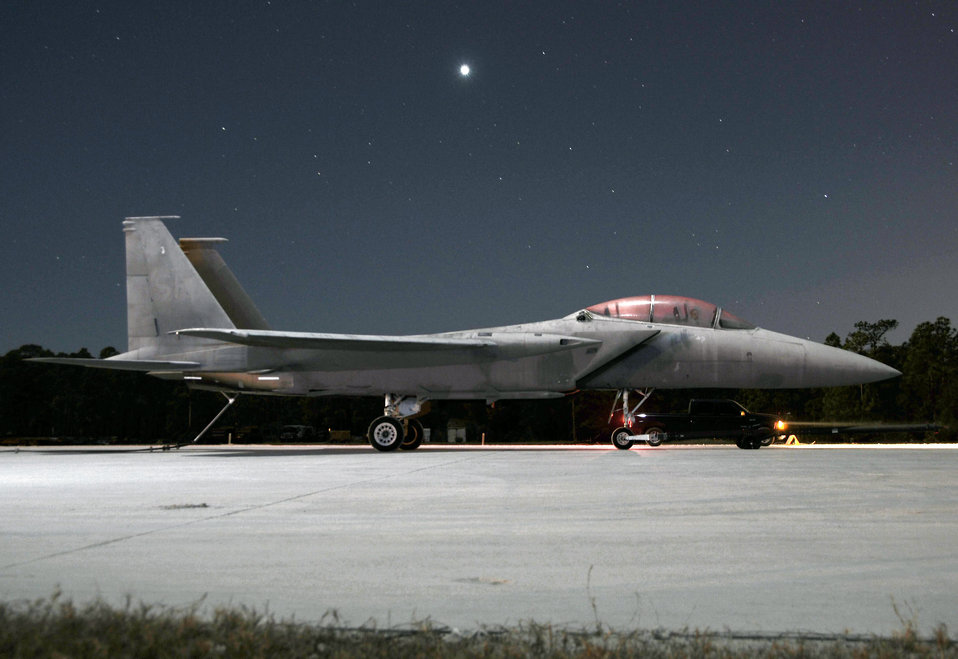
Silver Flag

An F-15 sits on the runway after a night time barrier engagement simulation during a Silver Flag exercise Feb. 5. Silver Flag exercise is a training exercise conducted at Tyndall Air Force Base, Fla., to train military personnel within their prespective career field.